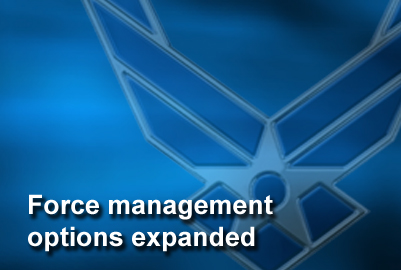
Force Management